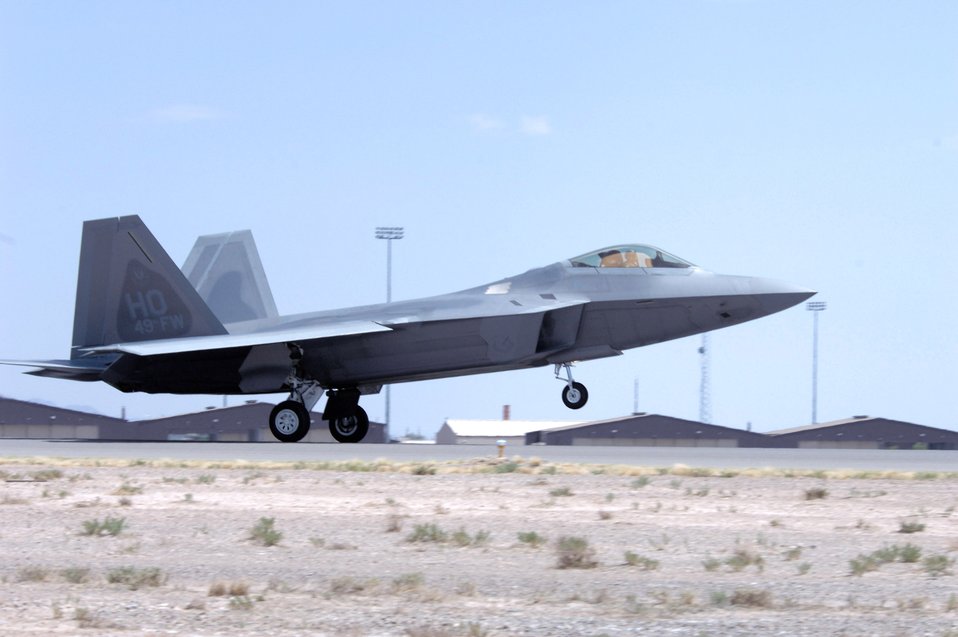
Raptors arrive at Holloman

An F-22 Raptor flown by Col. Jeff Harrigian arrives June 2 at Holloman Air Force Base, N.M., June 2. Holloman AFB is one of four bases the F-22s will be assigned at. Prior to landing, the jets flew over the Tularosa Basin, giving community members a chance to see the new aircraft.